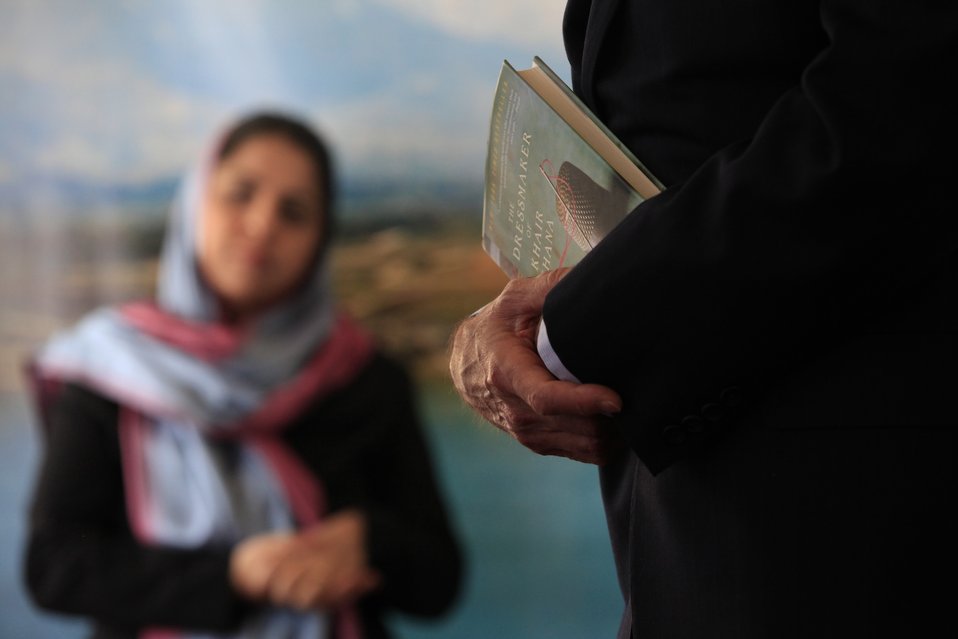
Secretary Kerry Tours Women’s Entrepreneurship Showcase in Kabul

U.S. Secretary of State John Kerry tours local businesses in Kabul, Afghanistan on March 26, 2013.